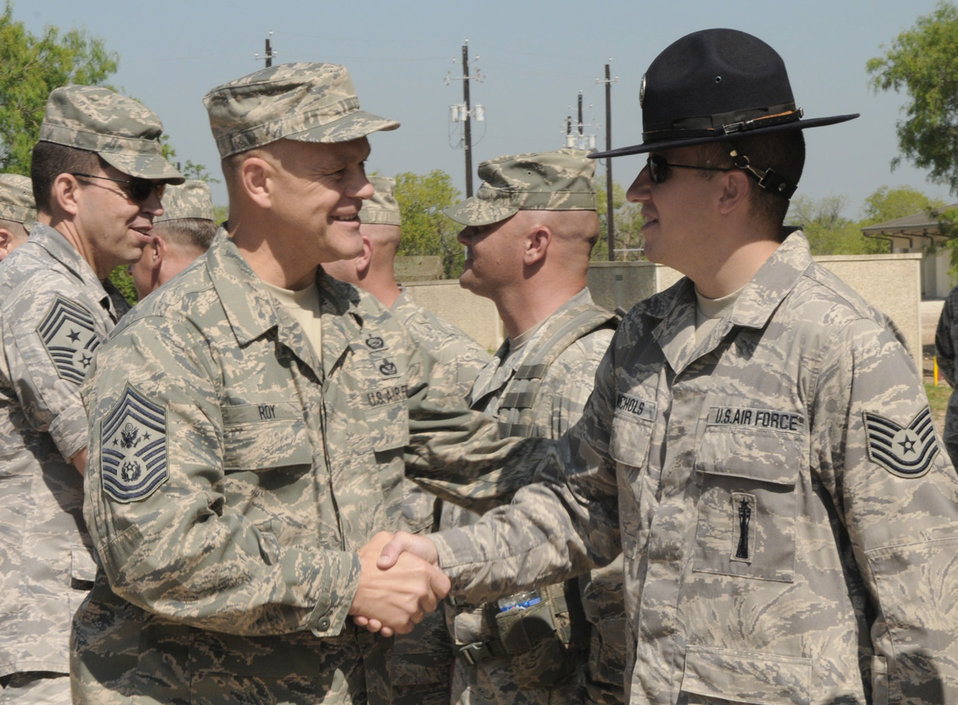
CMSAF discusses force priorities, continued support for families and wounded warriors

Chief Master Sergeant of the Air Force James A. Roy shakes hands with Tech. Sgt. Chuck Nichols, a 322nd Training Squadron military training instructor, July 9 at Lackland Air Force Base, Texas.